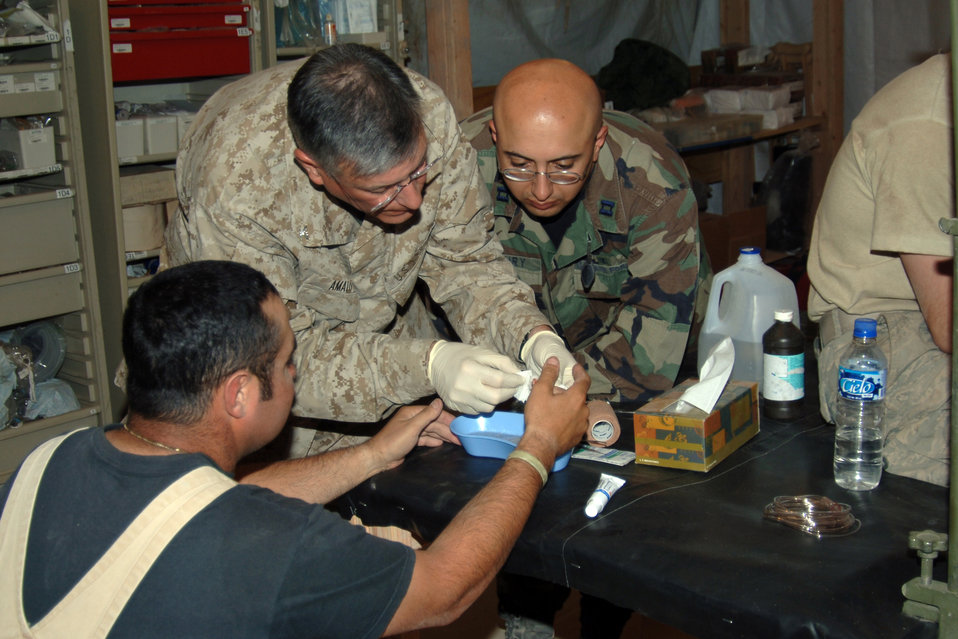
Peru doctors assist team in combating acute altitude symptoms during Andean deployment

Capt. (Dr.) Ronald Khoury (right) and Navy Capt. (Dr.) Peter Amatoa care for a patient with a severe cut June 6 at a clinic in the mountainous region of Ayacucho, Peru. The doctors are participating in New Horizons-Peru 2008, a U.S. Southern Command-sponsored humanitarian mission set on improving the quality of life of underprivileged Peruvians. Doctor Khoury is deployed from Nellis Air Force Base, Nev., and Doctor AMatoa is deployed from Westover AFB, Mass.